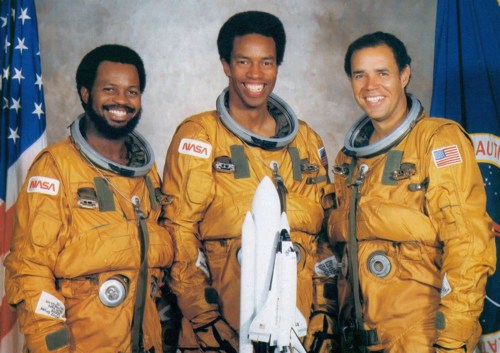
Col. Frederick Gregory